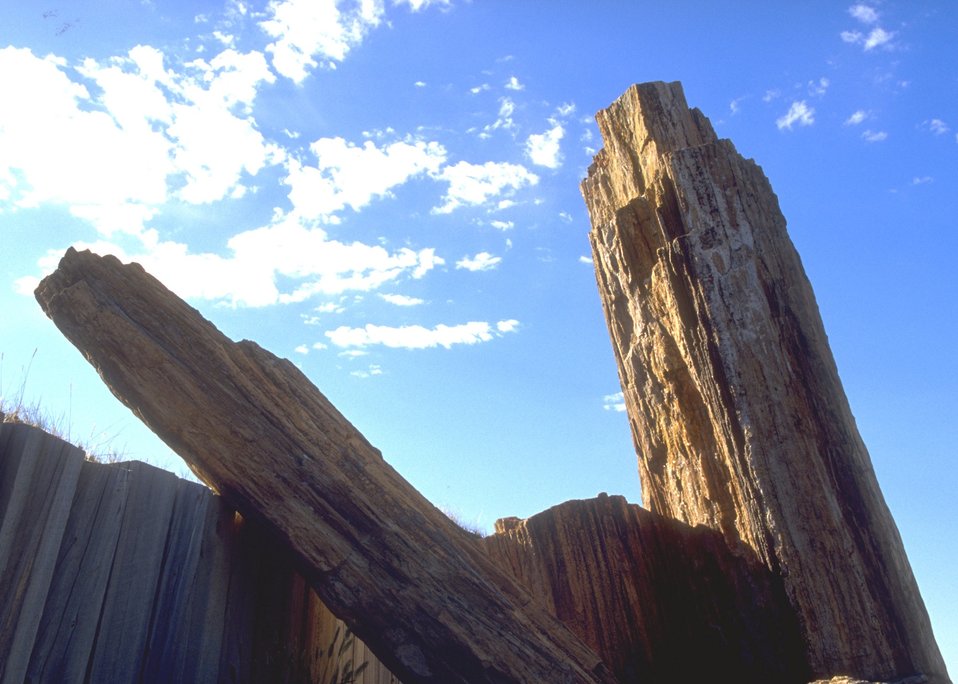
Dry Creek Petrified Tree Area, Buffalo Field Office.